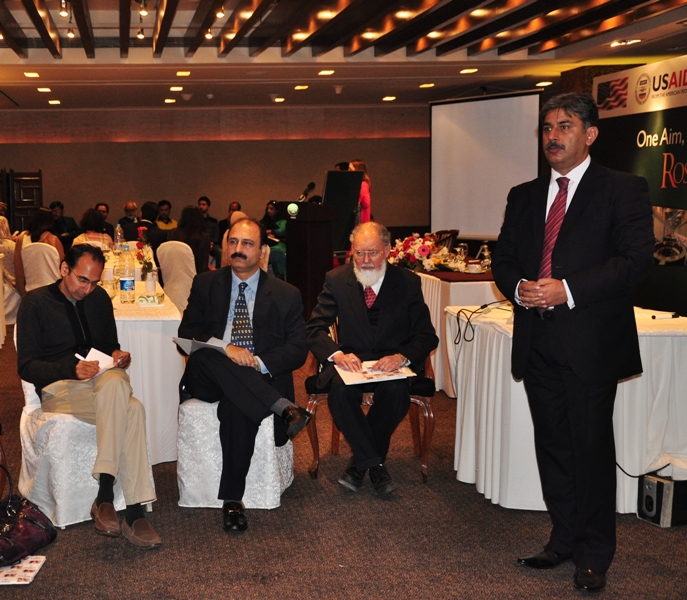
Group discussion.